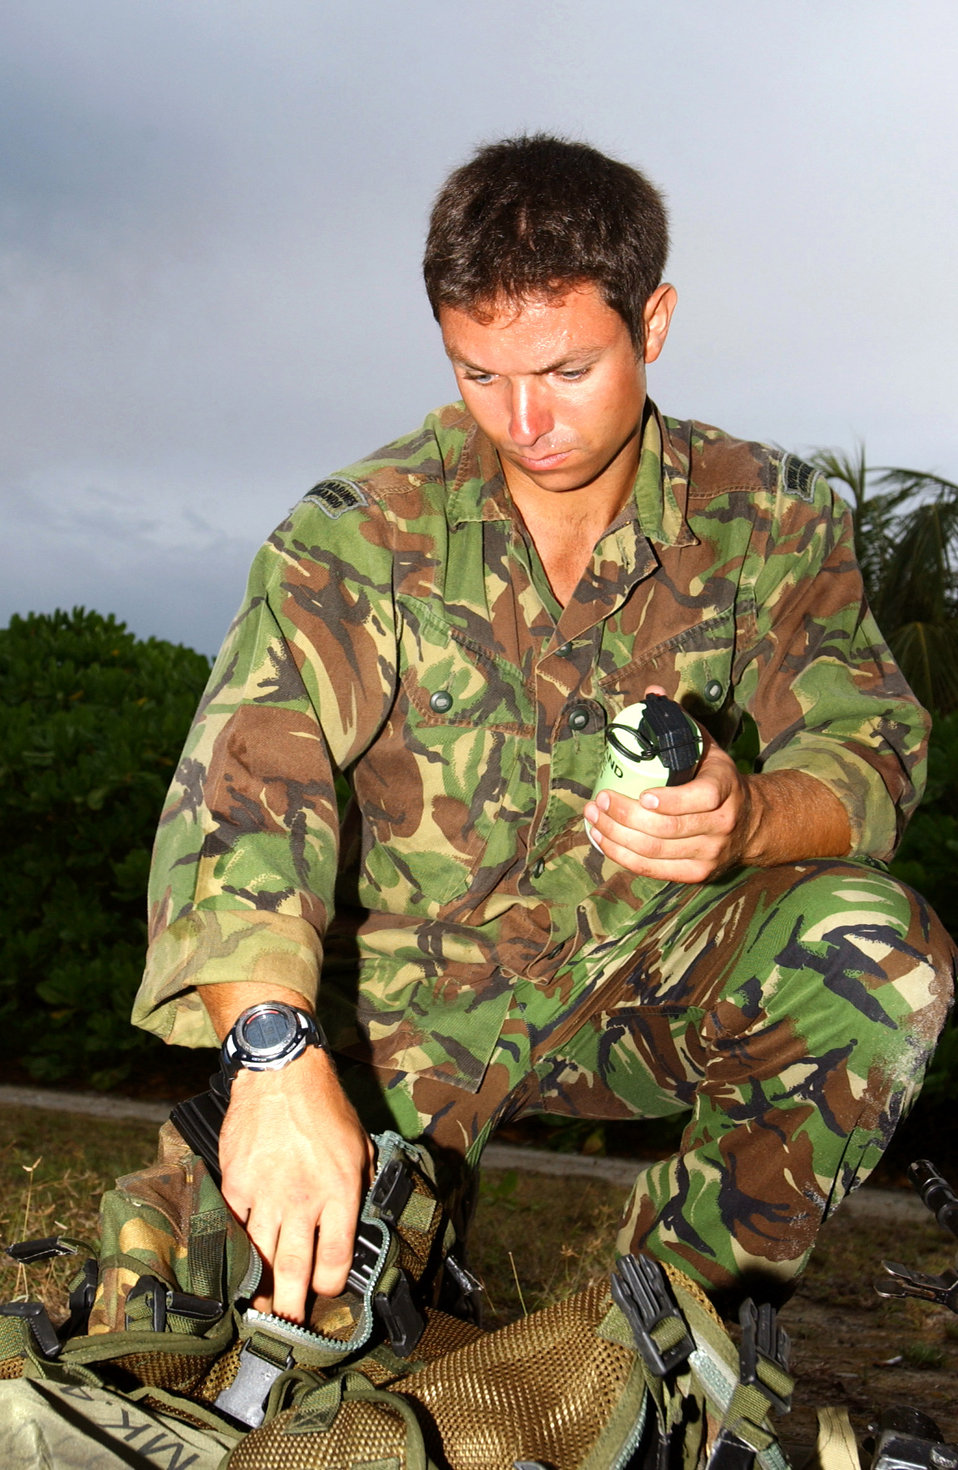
Ready, aim, fire

OPERATION ENDURING FREEDOM -- British royal marine commando Simon Watton packs up after a firepower demonstration June 24 at a forward-deployed location. The demonstration involved the British Royal Marines, and U.S. Air Force security forces and explosive ordnance disposal Airmen deployed with the 40th Air Expeditionary Group.